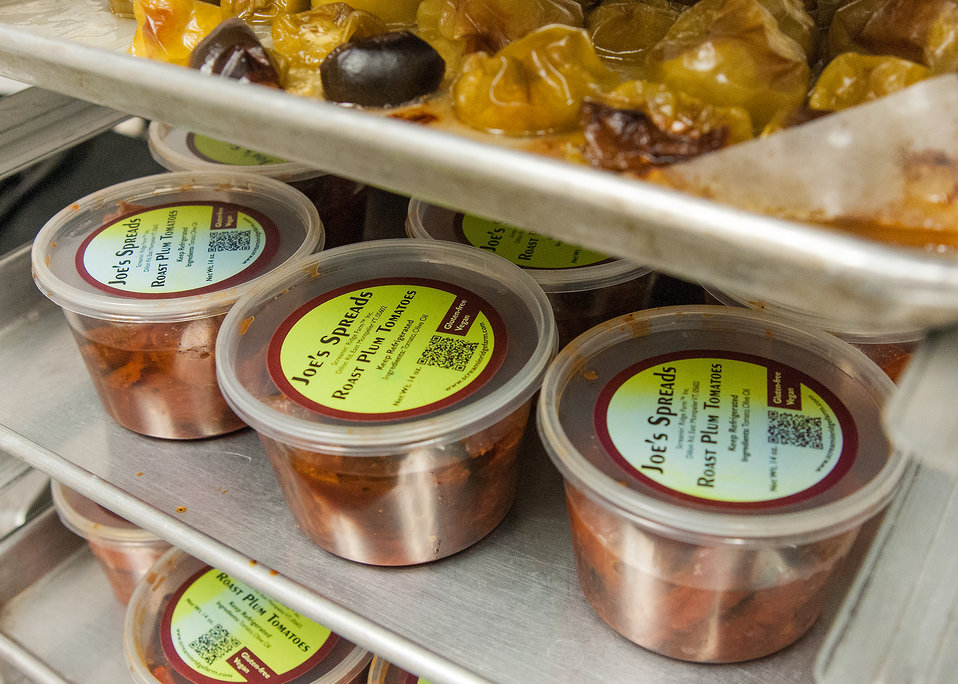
The Mad River Food Hub received a U.S. Department of Agriculture (USDA) Rural Development (RD) Rural Business Enterprise Grant for the local farmers to grow vegetables, produce meat products and convert them to value added products ready for market. Screamin' Ridge Farm in East Montpelier, VT is a small, local, sustainable farm that is able to use the facilities at the Mad River Food Hub to produce prepared vegetables and sauces on Sep. 17, 2013.